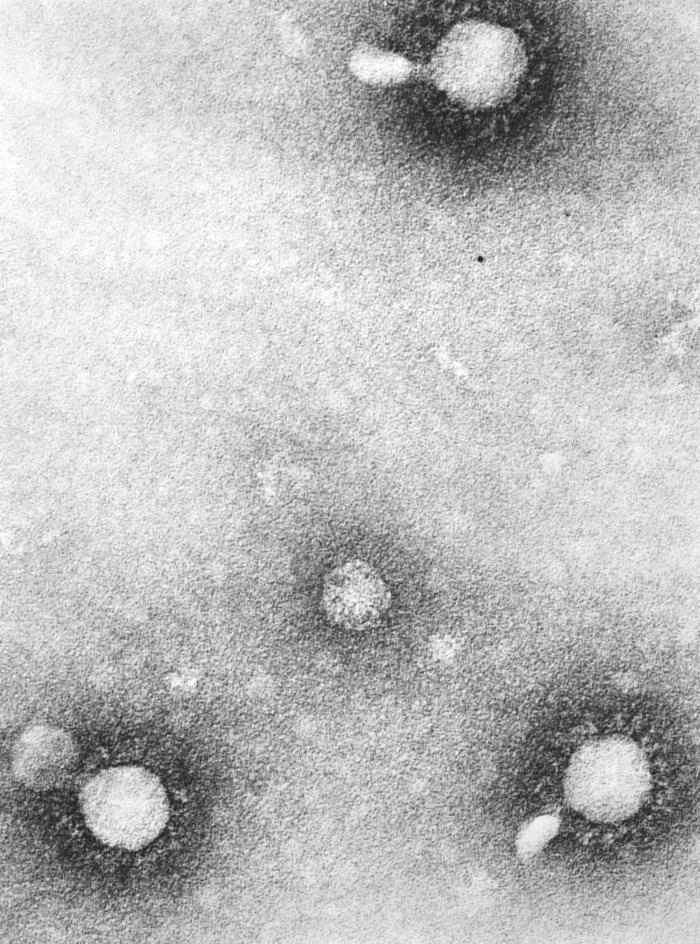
This negatively-stained 1975 transmission electron micrograph (TEM) revealed the presence of a number of Venezuelan equine encephalitis (VEE) virus virions in this tissue specimen, which had additionaly been fixed using phosphotungstic acid (PTA). This chemical is very electron-dense, and due to proposed electrostatic forces of attraction, clings to the capsid surface of each viral particle or virion, thereby, highlighting the presence of such pathogens. VEE is a Togaviridae family member, and a member of the genus Alphavirus.